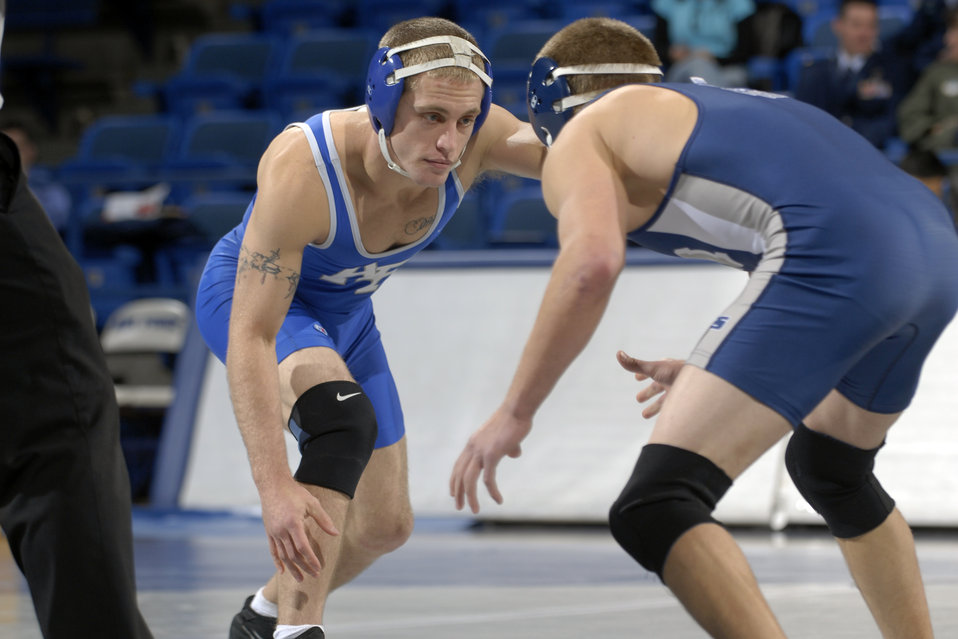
Falcons lose in first home contest

U.S. Air Force Academy, CO - Junior Derek Gillespie wrestles Colorado School of Mines' Dylan Lewis, a sophomore, in the 141 weight class during Air Force's first home contest of the season at the Air Force Academy's Clune Arena Dec 11. Gillespie recorded a fall over Lewis at the end of the first period. Air Force defeated Colorado School of Mines, 33-13.